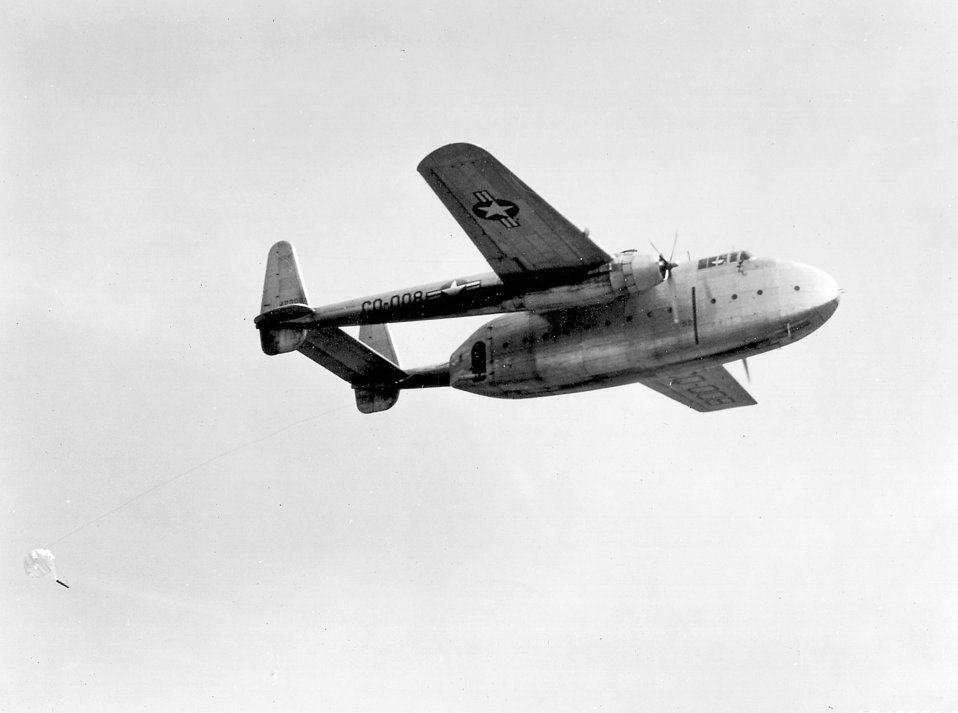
C-82

1940's -- The versatile Fairchild C-82